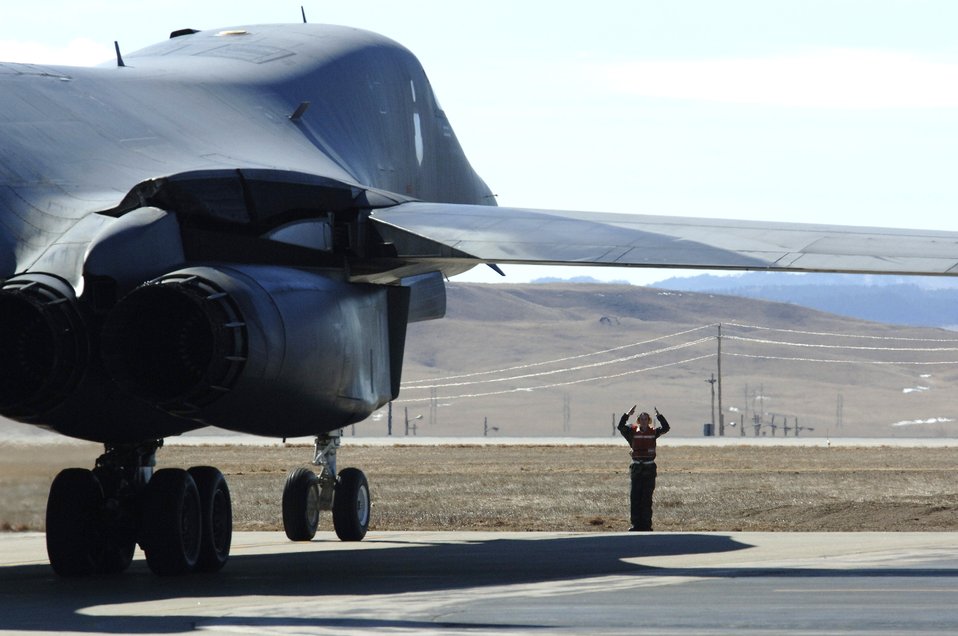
Fine-tuning the fleet

A B-1B Lancer from the 34th Bomb Squadron is cleared to taxi out to the Ellsworth Air Force Base, S.D., runway March 06 for an operational readiness exercise mission. Base officials are preparing for a scheduled operational readiness inspection later this year.